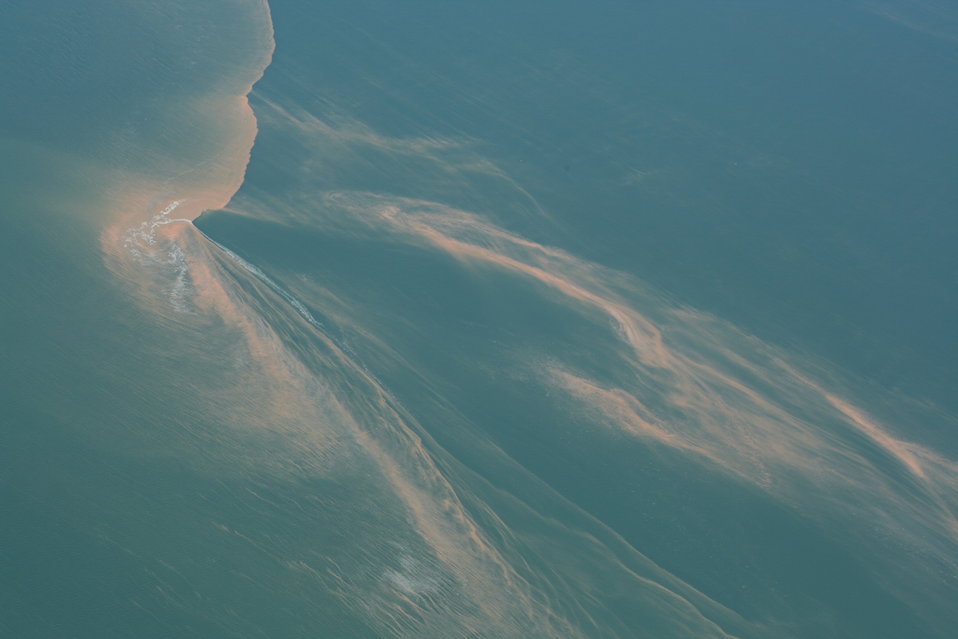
Oil west of Chandeleur Islands

May 5, 2010 - Oil streak west of Chandeleur Islands

Photo taken from U.S. EPA's Airborne Spectralphotometric Environmental Collection Technology (ASPECT) aircraft.